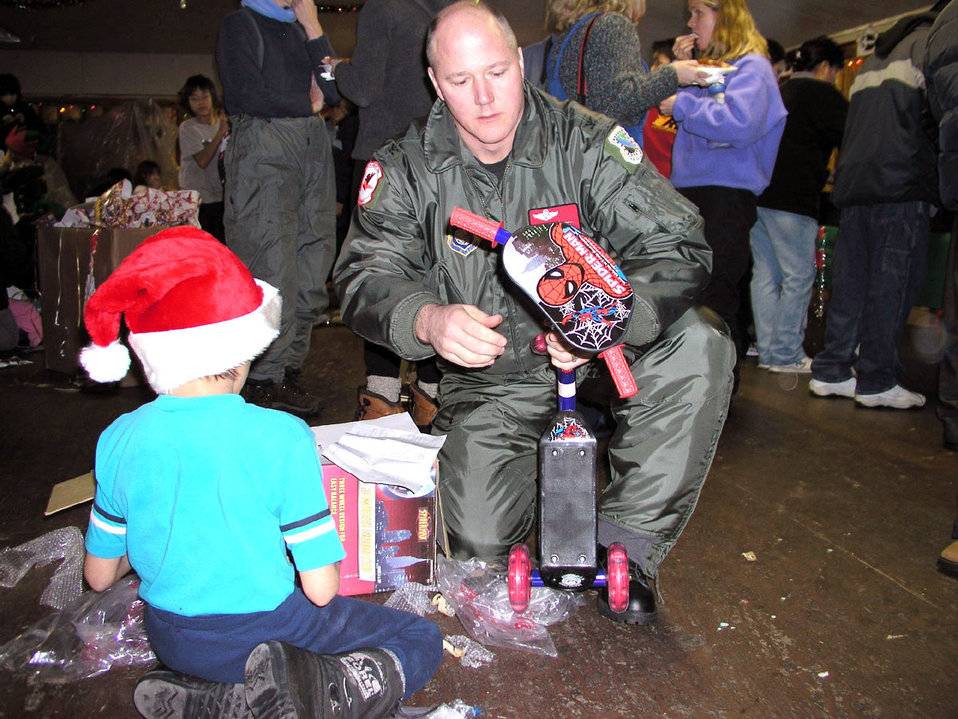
Holiday cheer

ARCTIC VILLAGE, Alaska -- Col. James Sturch helps a boy put together his new scooter. Sturch participated in the 517th Airlift Squadron's annual visit here, 75 miles north of the Arctic Circle. Sturch is the 3rd Wing vice commander at Elmendorf Air Force Base, Alaska.